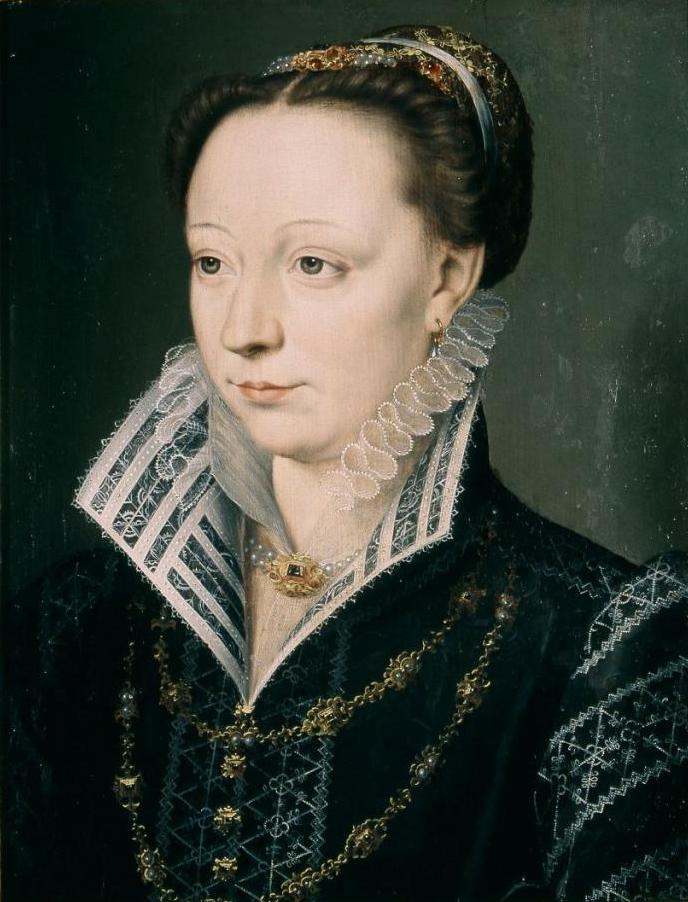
Clouet Claude Catherine de Clermont